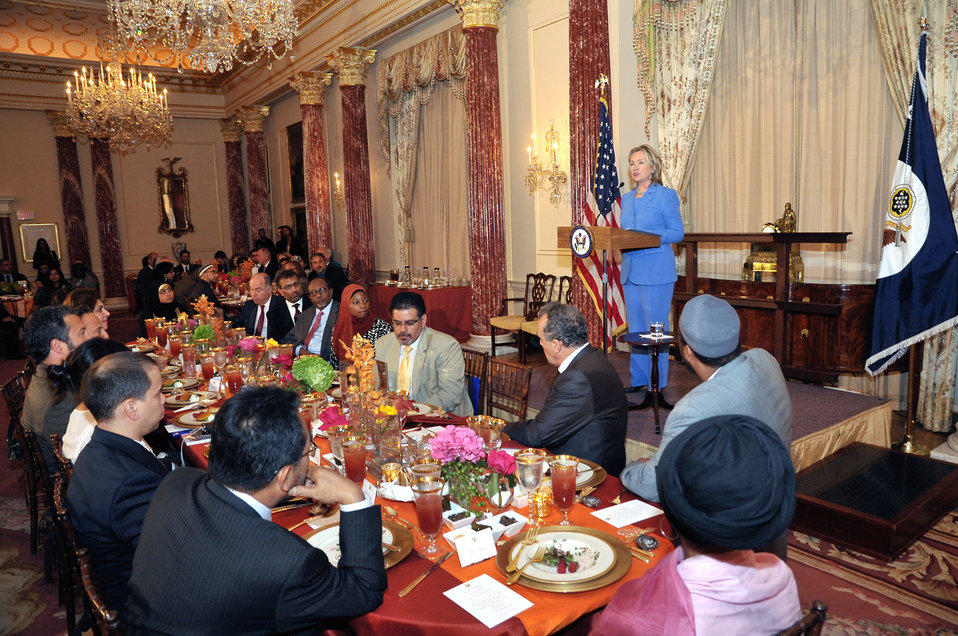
Secretary Clinton Delivers Remarks at Annual Iftar

U.S. Secretary of State Hillary Rodham Clinton delivers remarks at the U.S. Department of State's annual iftar in Washington, D.C., on September 7, 2010.